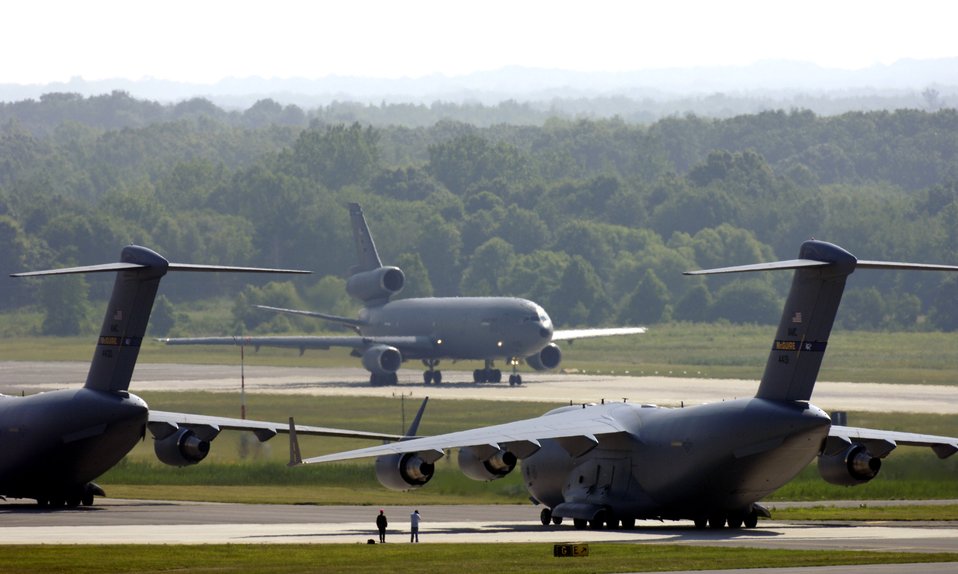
Elephant Walk

KC-10 Extenders and C-17 Globemaster IIIs from McGuire Air Force Base, N.J., taxi down the flightline during the emergency response exercise Elephant Walk. This is the first time C-17s and KC-10s have been paired in an exercise. Sixteen aircraft launched from McGuire on Friday, June 30, as part of the exercise.